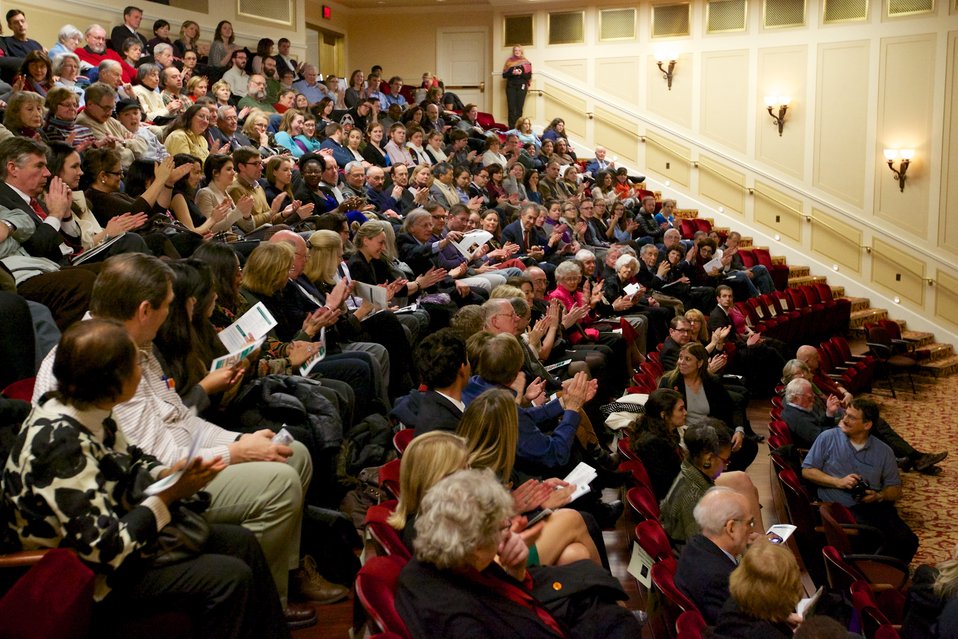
Monuments Men Public Screening; Audience applauds Dr. Greg Bradsher, archivist, for his support of research into the Monuments Men